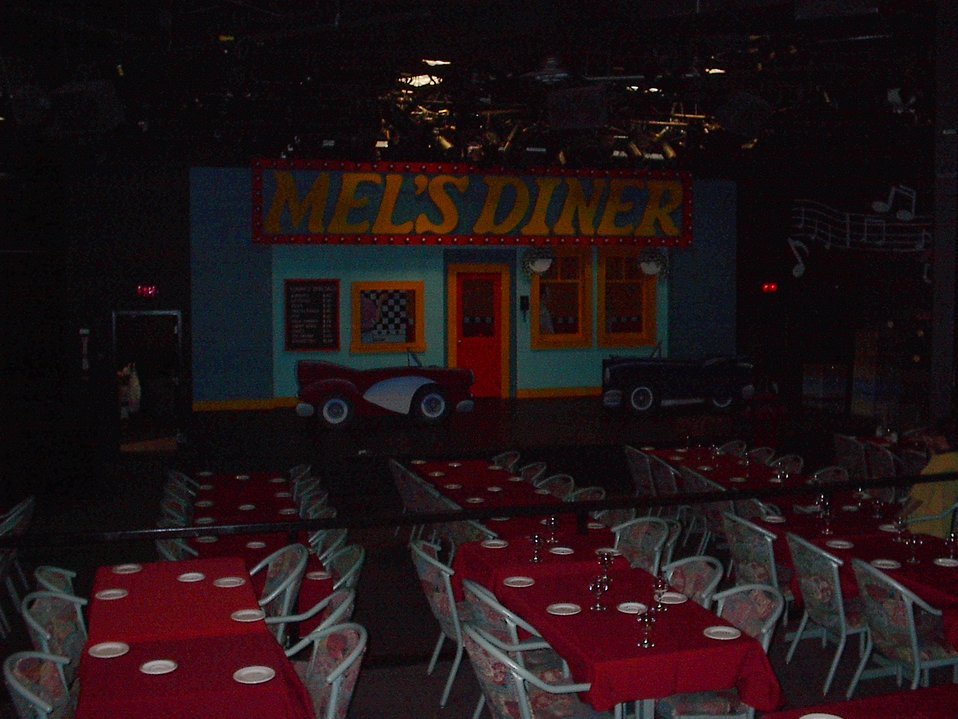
Author: Matteso Snapped the photo myself while at the mall